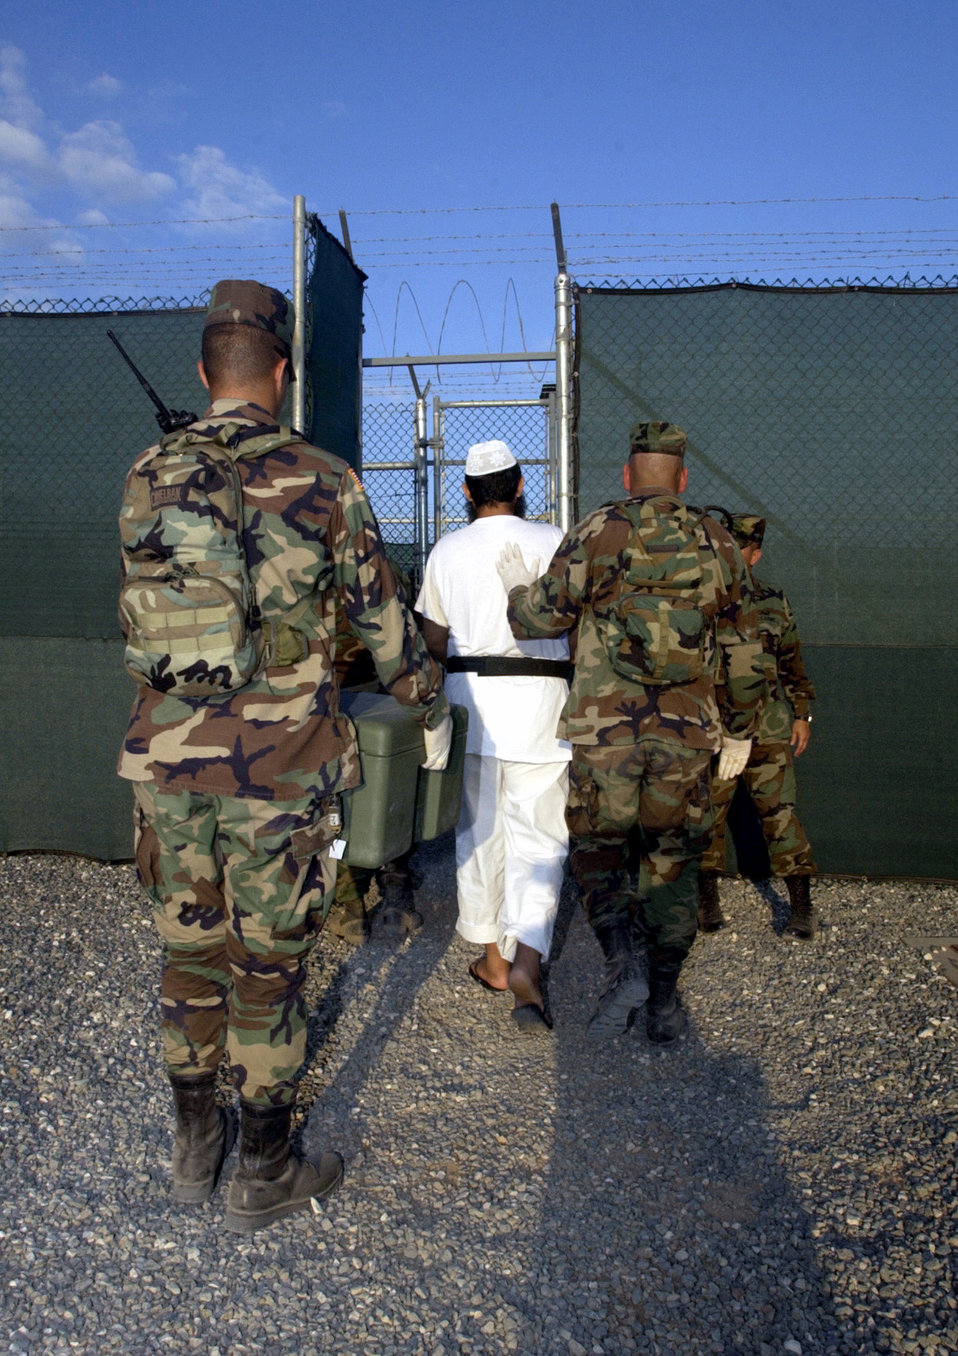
Escort duty

U.S. NAVAL BASE GUANTANAMO BAY, Cuba -- A detainee is escorted to a medium-security facility here that houses detainees in a communal living environment.